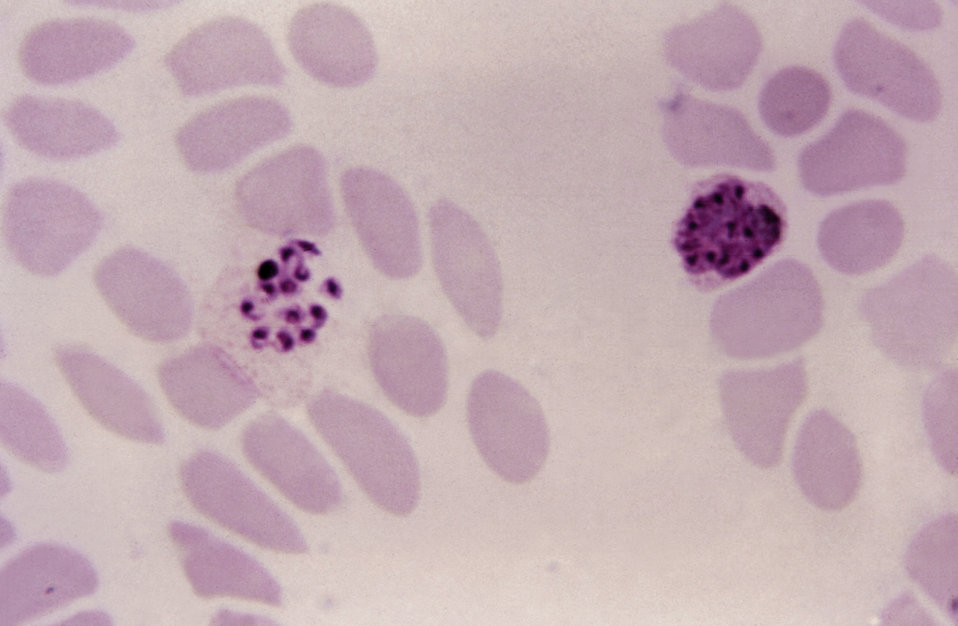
This thin film Giemsa stained micrograph depicts both a mature, and immature Plasmodium vivax schizont.